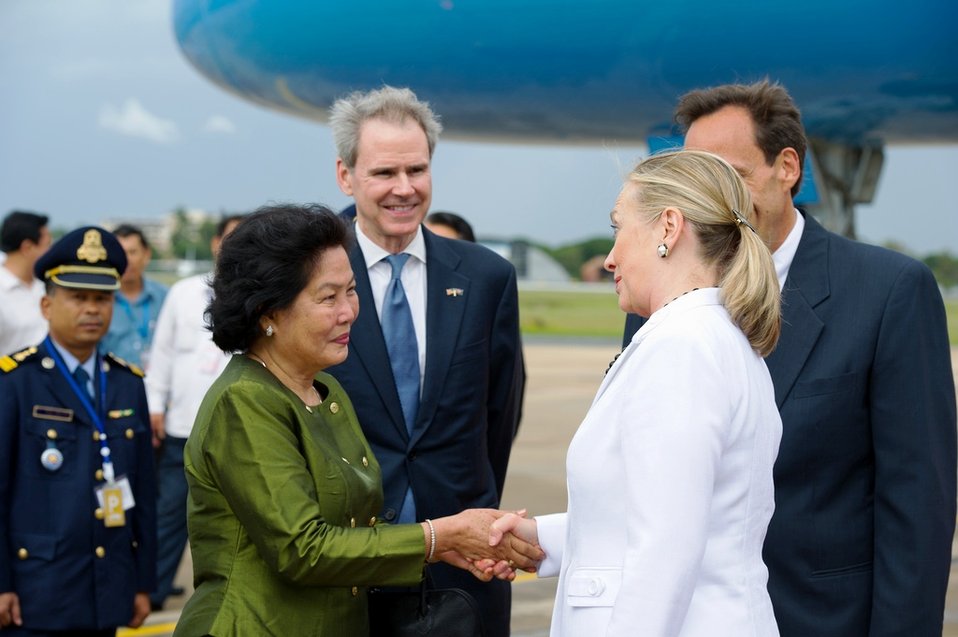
Secretary Clinton Is Greeted by Cambodia's Secretary of State of the Ministry of Foreign Affairs

U.S. Secretary of State Hillary Rodham Clinton is greeted by Secretary of State of the Ministry of Foreign Affairs Sun Saphoeun to Cambodia in Phnom Penh, Cambodia, on July 11, 2012.